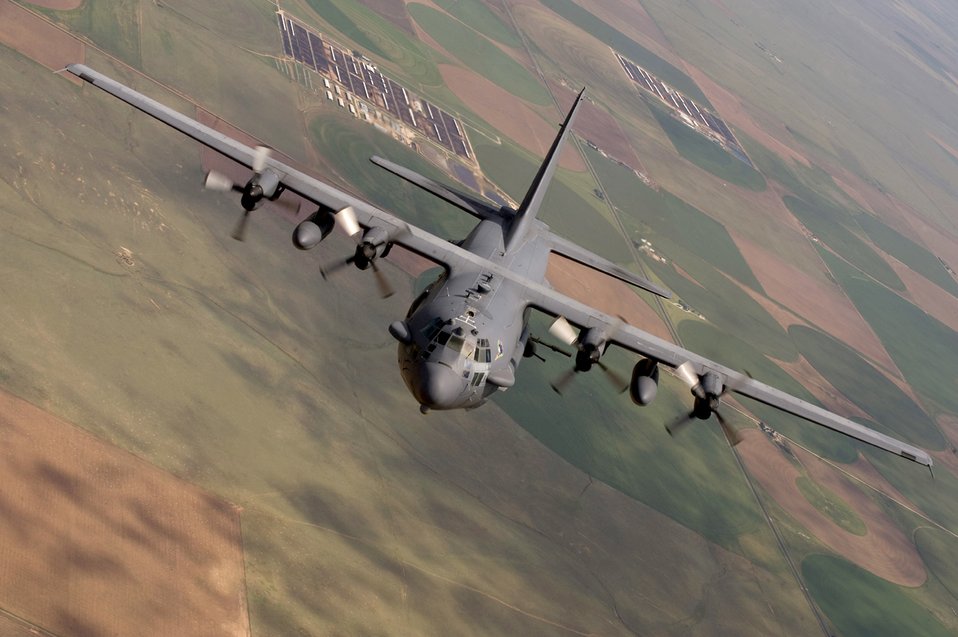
Watch out!

An AC-130 Spectre from the 16th Special Operations Squadron flies a training mission Aug. 11, 2010, at Cannon Air Force Base, N. M. .